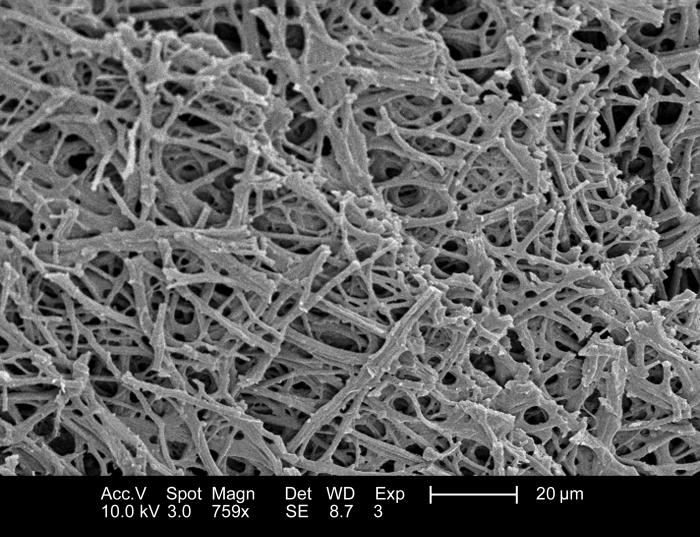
This 2005 scanning electron micrograph (SEM), depicted the morphologic characteristics of the inner surface of an unidentified bird's eggshell. In this view, morphologic details were revealed depicting the trabeculated configuration of the shell's inner membranous layers was revealed. This shell fragment was retrieved from the grounds of the Decatur, Georgia suburbs; Magnified 759x.